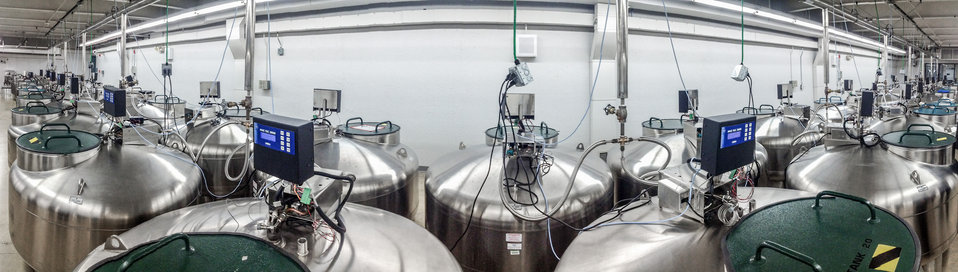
This is the U.S. Department of Agriculture's (USDA) Agriculture Research Service (ARS) National Center for Genetic Resources Preservation (NCGRP) Cryogenic Storage Vault in Ft. Collins, CO on Wednesday, Nov. 6, 2013. The vault currently operates more than 45 cryogenic tanks that hold animal germplasm, plant tissue culture, and seeds that are stored at -196 °C (-321 °F) in liquid storage or to -193 C. (-315 °F) in vapor storage degrees centigrade (-321 °F). NCGRP is the largest agricultural gene bank facility in the U.S. The NCGRP staff conducts groundbreaking research to develop more efficient and effective means for preserving plant and animal germplasm, and for better understanding the genetic structure of these invaluable materials. The research findings, preservation techniques, and specialized technology developed by the NCGRP have been adopted by gene banks around the world: many international scientists travel to the NCGRP for research and training.